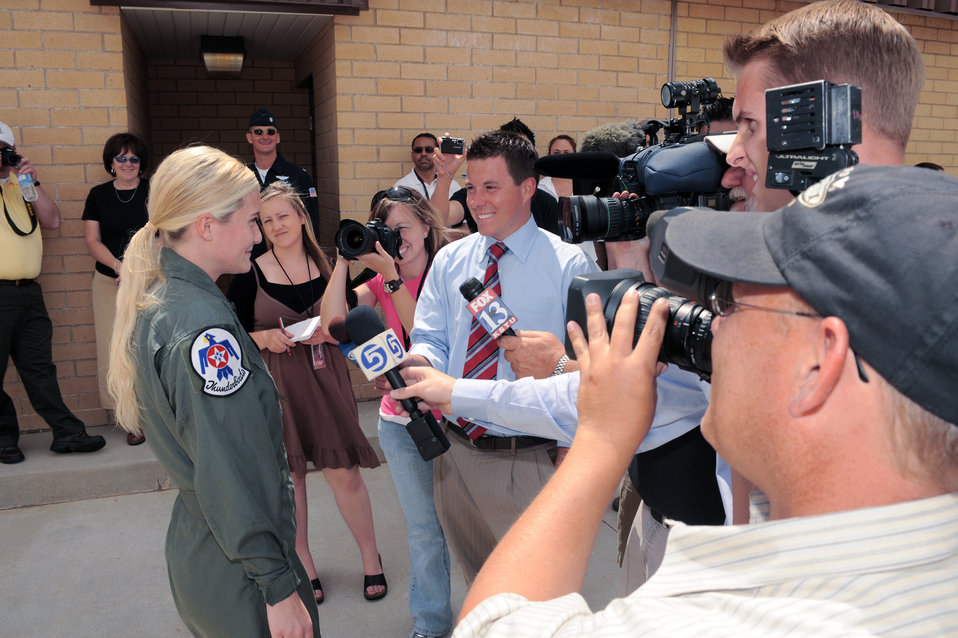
Hometown Hero

Megan Funk, a second grade teacher at Majestic Elementary School in Ogden, Utah, speaks with local media June 4 at Hill Air Force Base, Utah, before her Hometown Hero flight in a Thunderbird F-16 Fighting Falcon.